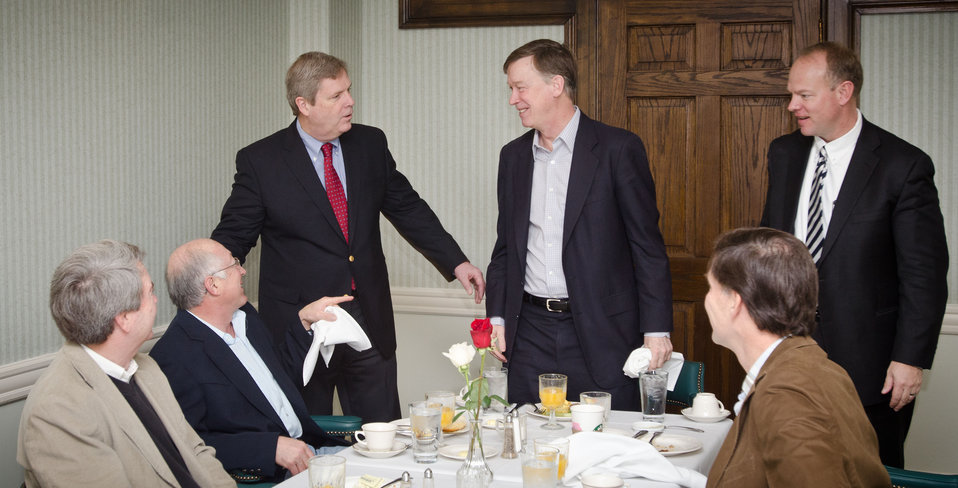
Agriculture Secretary Tom Vilsack welcomed Interior Secretary Ken Salazar (second from left) and Governors John Hickenlooper from Colorado, and Matt Mead from Wyoming, to the breakfast he hosted for Western Governors and Federal Officials, in the Lincoln Room at the United States Department of Agriculture headquarters, in Washington, D.C., on Sunday, February 26, 2012.